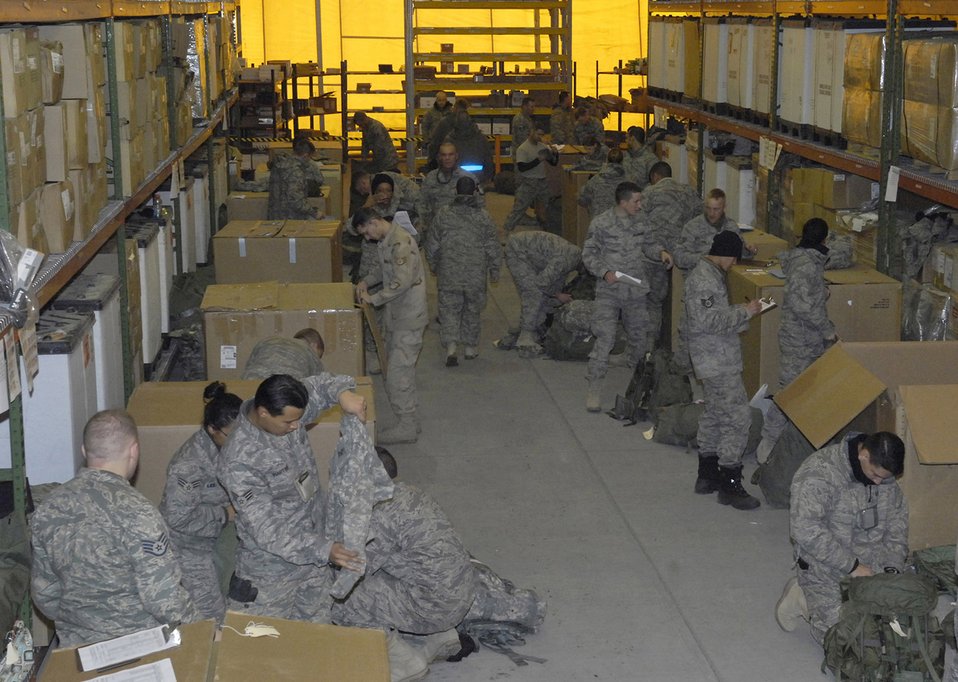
Manas center helps Airmen return home quicker

Redeploying Airmen process through the line Jan. 19 at Manas Air Base, Afghanistan. The 156-person team was part of a test for redeploying Airmen serving